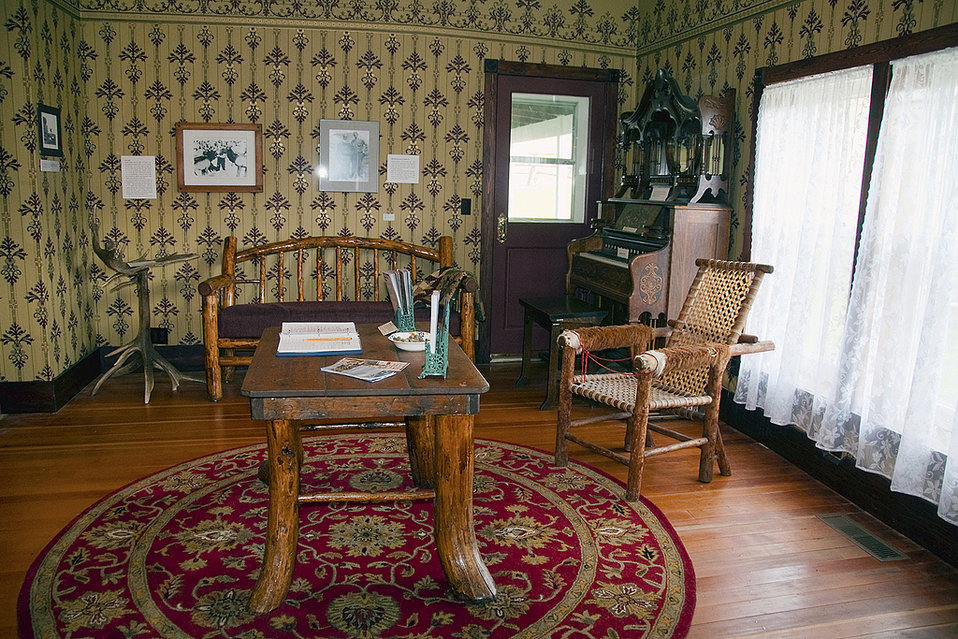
furnished room, Miller Homestead

Traditionally-Furnished Room in the Historic Miller House
Displays in the Miller House focus on homesteading and the establishment of the National Elk Refuge in Wyoming.